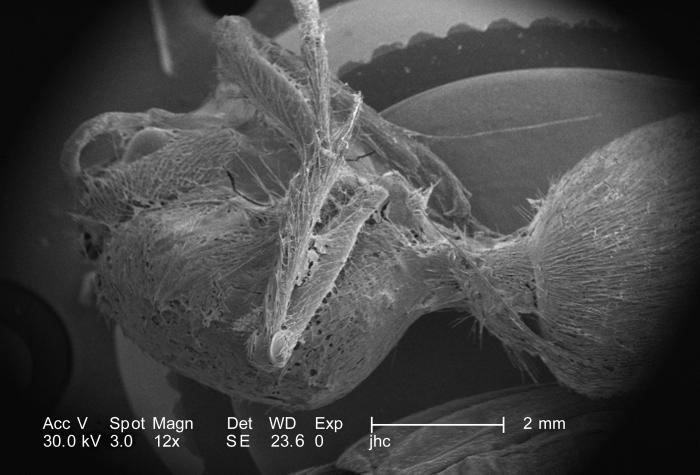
Under a very low magnification of only 12X, this scanning electron micrograph (SEM) depicted a rather ominous scene, for entangled in this brown recluse spider web was the exoskeletal remains of an unidentified insect, which was believed to be an ant. Known as 'spider silk', the strands of silk are produced by the spider's 'spinnerets', which are glands located in the distal tip of its abdomen. Once the prey has become entangled in the web, the spider will cautiously, though aggressively, approach the prey, subduing it with a neurotoxic bite, which also contains proteolytic, or protein-destroying enzymes, and further enwraps the prey in a web cocoon like the one seen here.